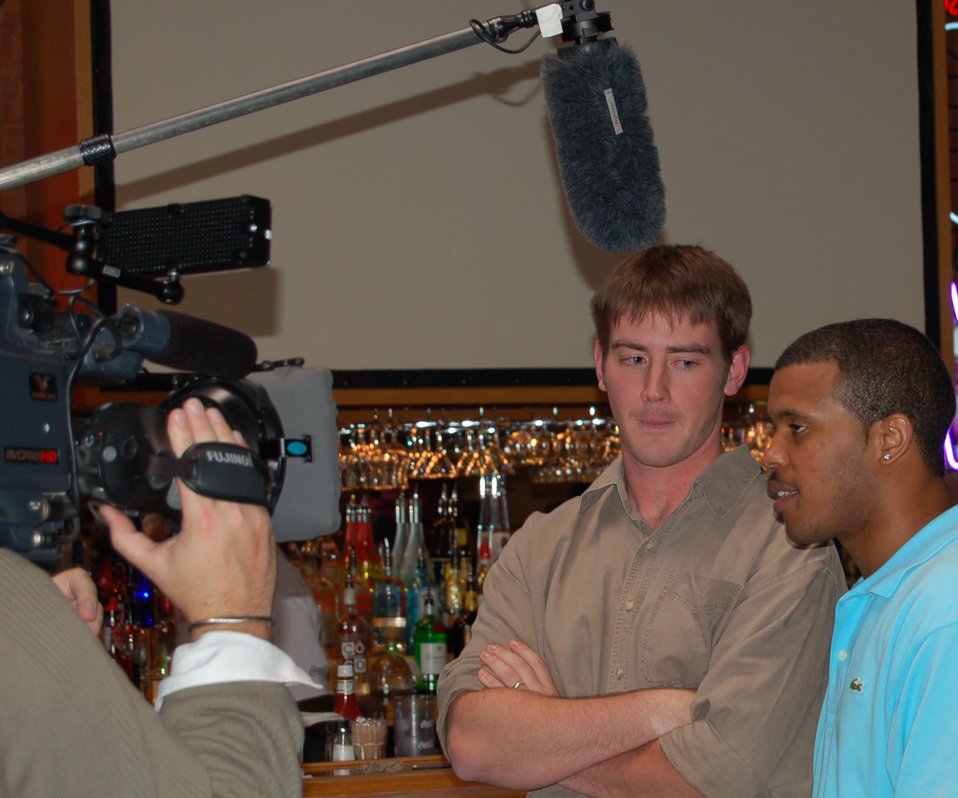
Airman 'brings it home' for NBA Live

Senior Airman Milton Carrell (right) is interviewed before competing in the ESPN series,